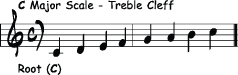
C Major scale - showing scale root note of 'C'